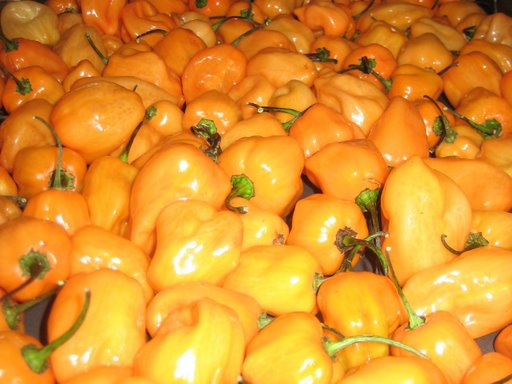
Habeneros Ready to Roast for hot sauce. John Patrick Mizell, 2007 Tucson, Arizona USA